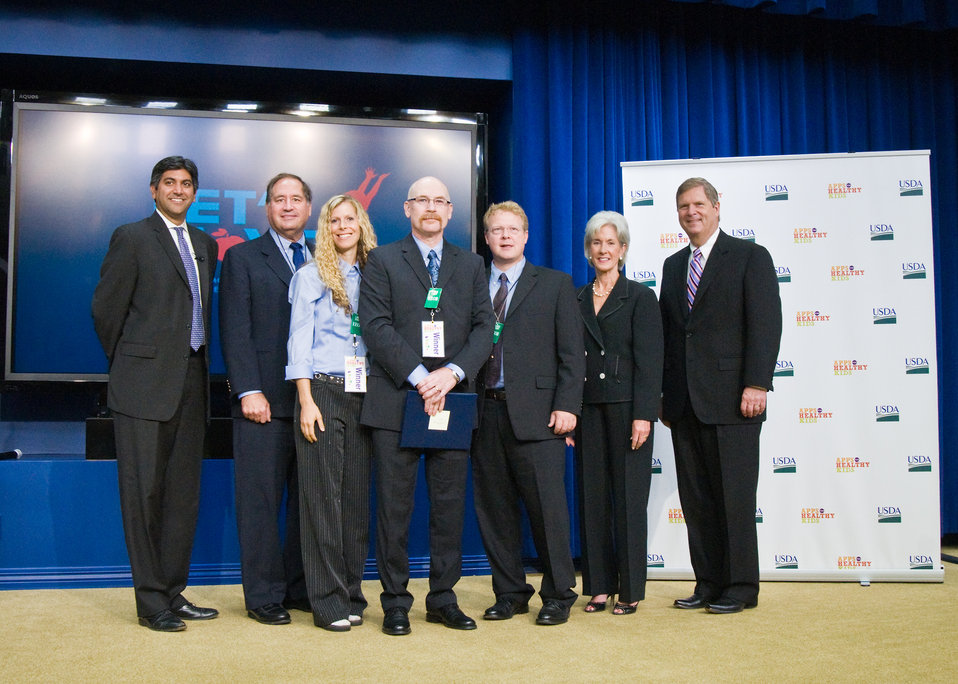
Aneesh Chopra, White House Chief Technology Officer, Health and Human Services Secretary Kathleen Sebelius and Agriculture Secretary Tom Vilsack present Second Prize to Dean Jenkins, Olympia, Washington, Team Leader and the developers of the app 'PapayaHead' of The Apps for Healthy Kids competition at the White House, in Washingtron, DC on Wednesday, September 29, 2010. The Apps for Healthy Kids competition is part of First Lady Michelle Obama’s Let’s Move campaign to end childhood obesity within a generation. The competition challenges software developers, game designers, students and other innovators to develop fun and engaging software tools and games to urge children, especially “tweens” (children ages 9-12) – directly or through their parents – to eat better and be more physically active. 'Papaya Head,' is a family meal planning website that allows each family member to fill out a unique profile of likes, dislikes, allergies and unique nutritional requirements. Fun drag and drop tools let the family build a meal plan for the day and graphically see the nutritional results of their choices. USDA Photo 10di1506-127 by Bob Nichols.